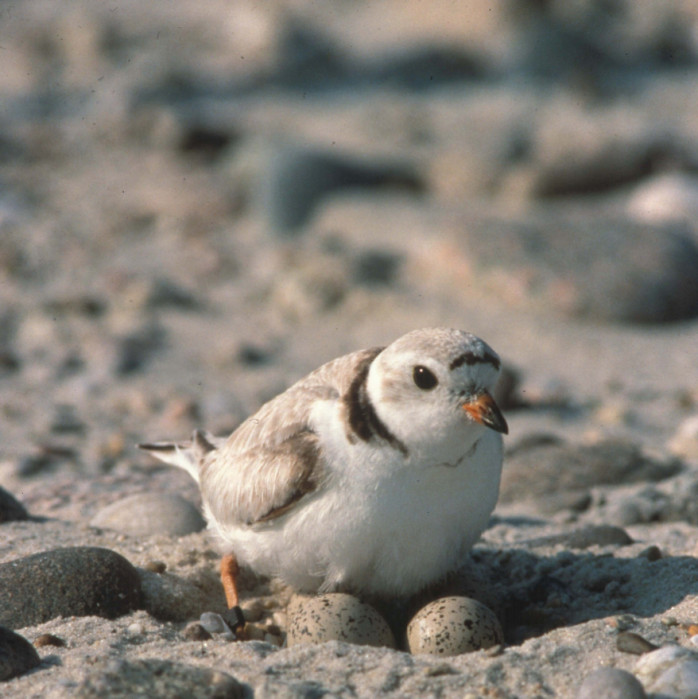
The U.S. Department of Agriculture (USDA) Animal Plant Health Inspection Service (APHIS) Wildlife Services (WS) helps to protect threatened piping plovers in 13 states. In Maine, Wildlife Services cooperates with Federal, State, and local Governments and interested organizations to protect piping plovers and least terns from avian and mammalian predators. Field specialists manage predation during the nesting season when these birds and their young are most vulnerable.